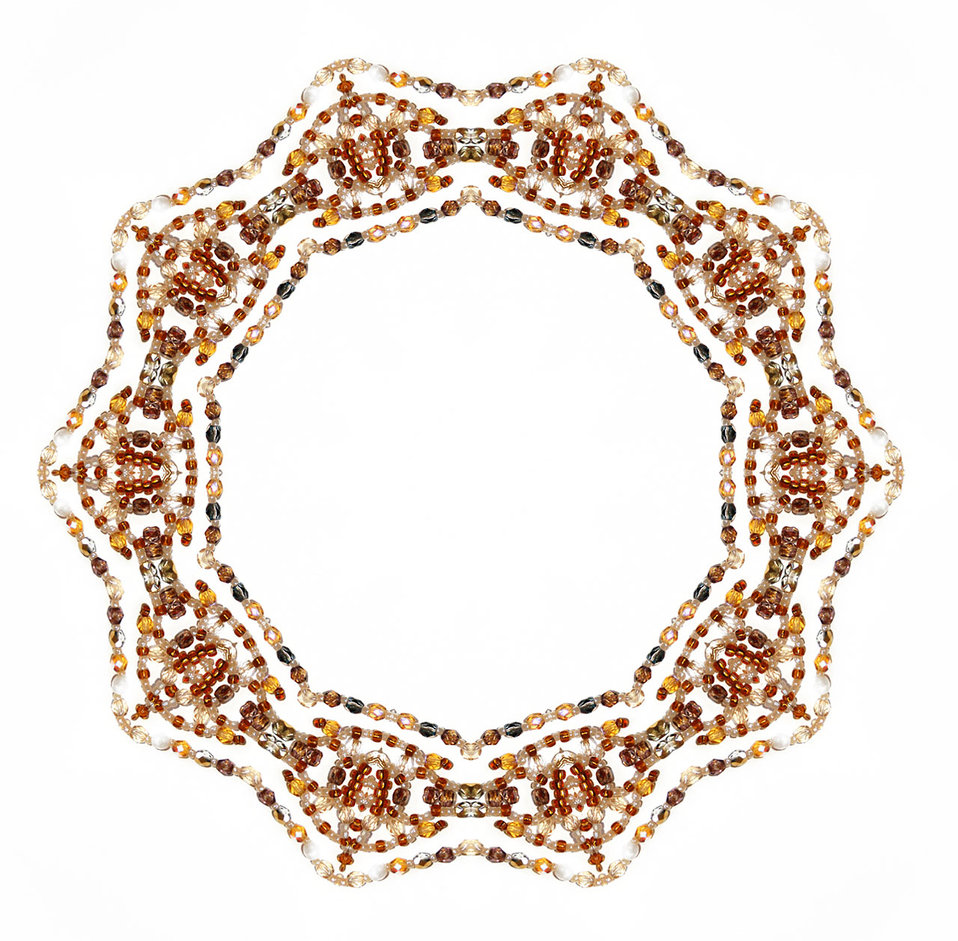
Ornamental beaded frame on white - real beaded jewellery.